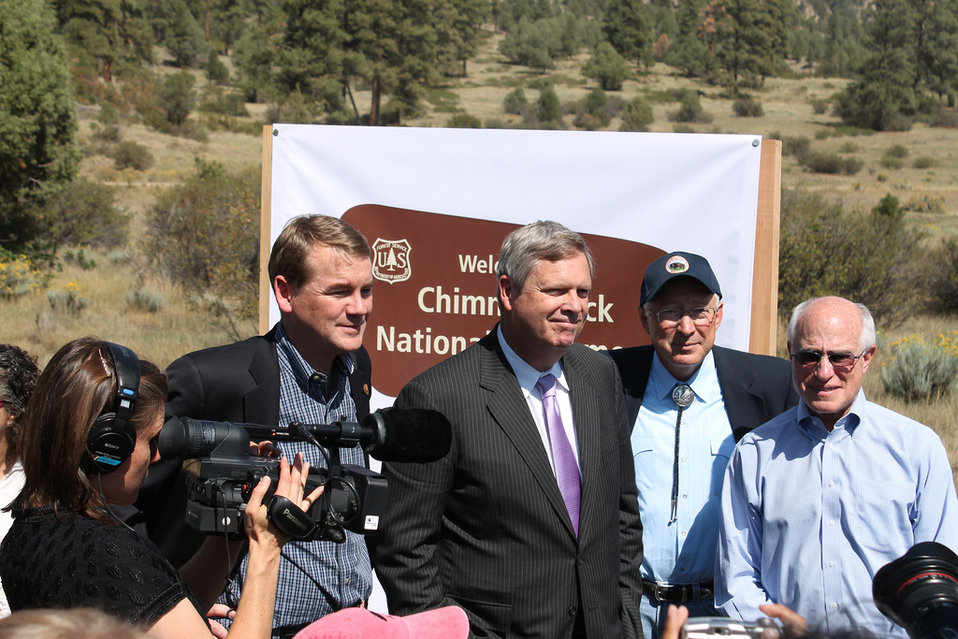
(L to R) Senator Michael Bennet (CO), Agriculture Secretary Tom Vilsack, Interior Secretary Ken Salazar, and Agriculture Under Secretary Natural Resources and Environment Harris Sherman speak to the press at the at the dedication of Chimney Rock as a National Monument in the San Juan National Forest in Southwest Colorado on Friday, Sept. 21, 2012. Chimney Rock is of great spiritual importance to Pueblos and other Tribes in the southwest corner of Colorado. With its twin sandstone pillars and its massive Chaco- style masonry walls perched 1,000 feet above the Piedra River Valley the monument protects a landscape important to the continuation of traditional cultural practices of the modern Puebloan Indians.